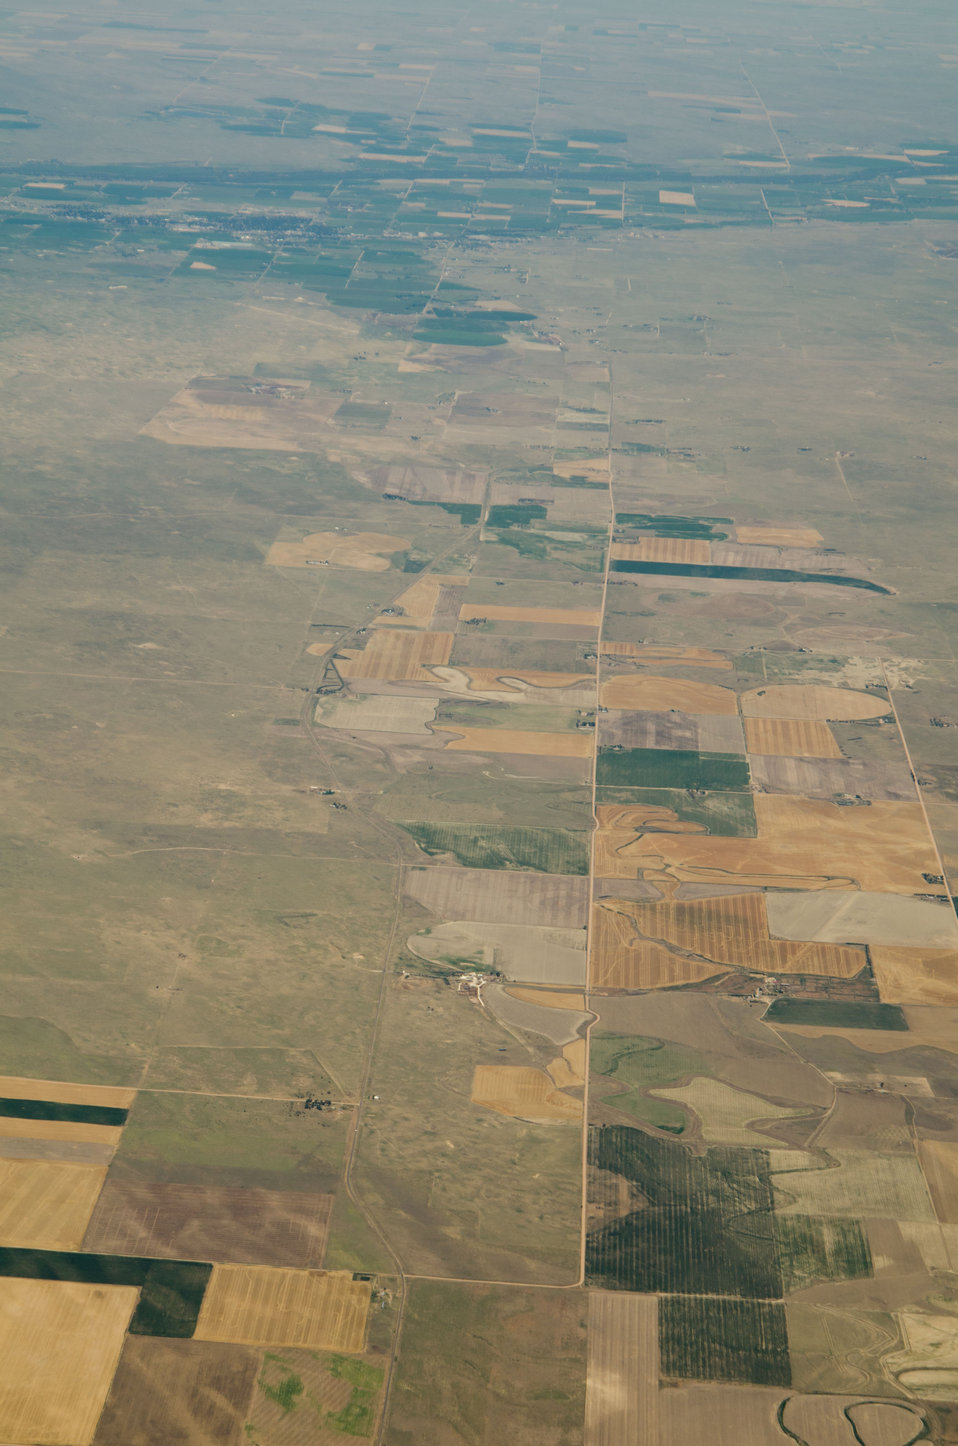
Aerial views of drought affected Colorado farm lands, 16 miles SE of Ft. Morgan, Colorado on Saturday, July 21, 2012. Green areas are irrigated, the yellow areas are dryland wheat crops.